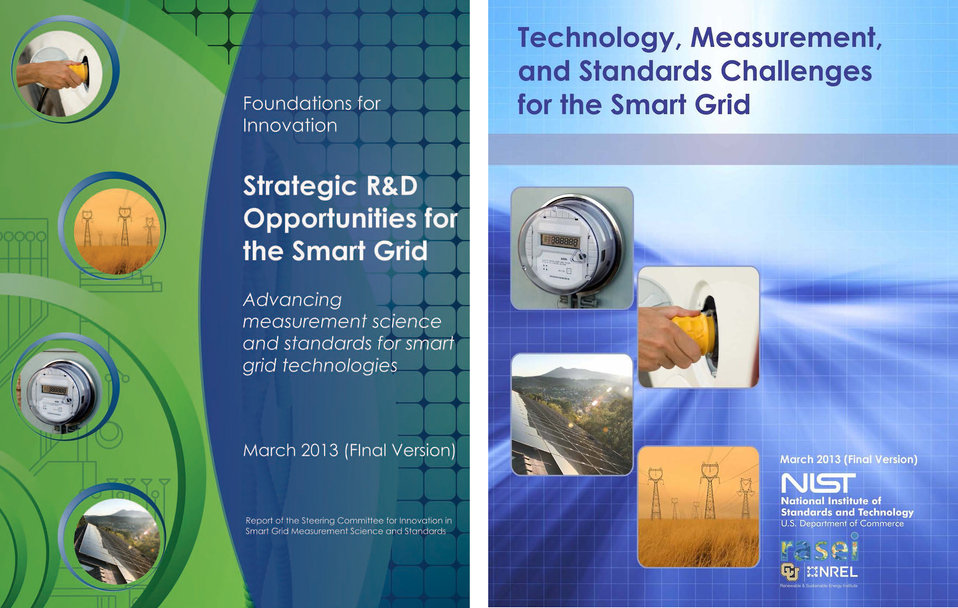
Smart Grid Publication Covers

Technology, Measurement, and Standards Challenges for the Smart Grid and Strategic R&D Opportunities for the Smart Grid covers.